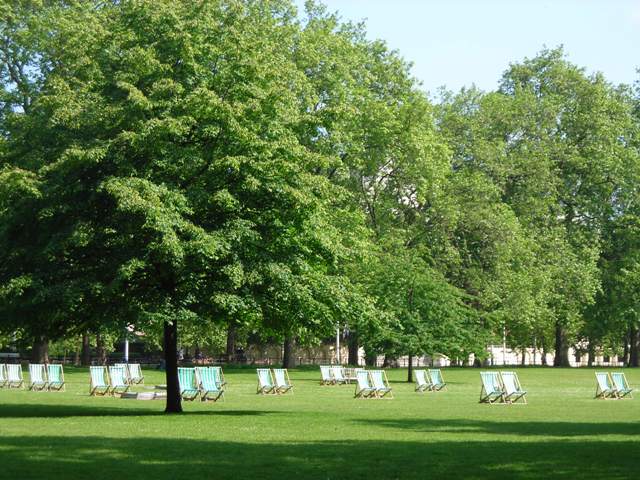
Uploaded by request of Frederique Kahn

Taken in London